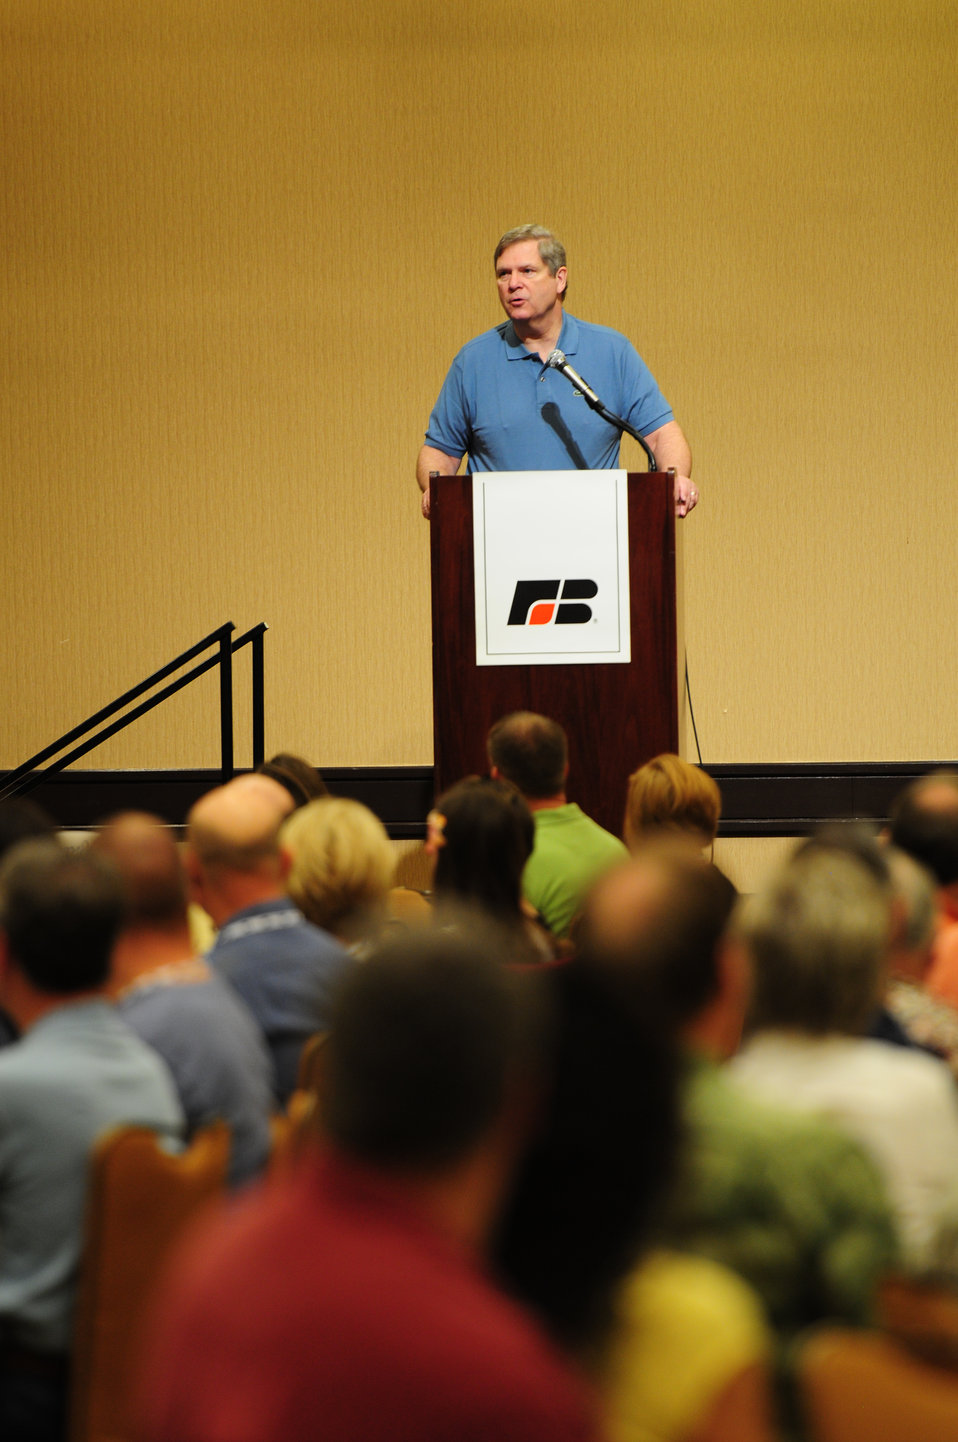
Agriculture Secretary Tom Vilsack speaks at the Iowa Farm Bureau event at the Sheridan Waikiki, in Honolulu, Hawaii, on Sunday, January 8, 2012.